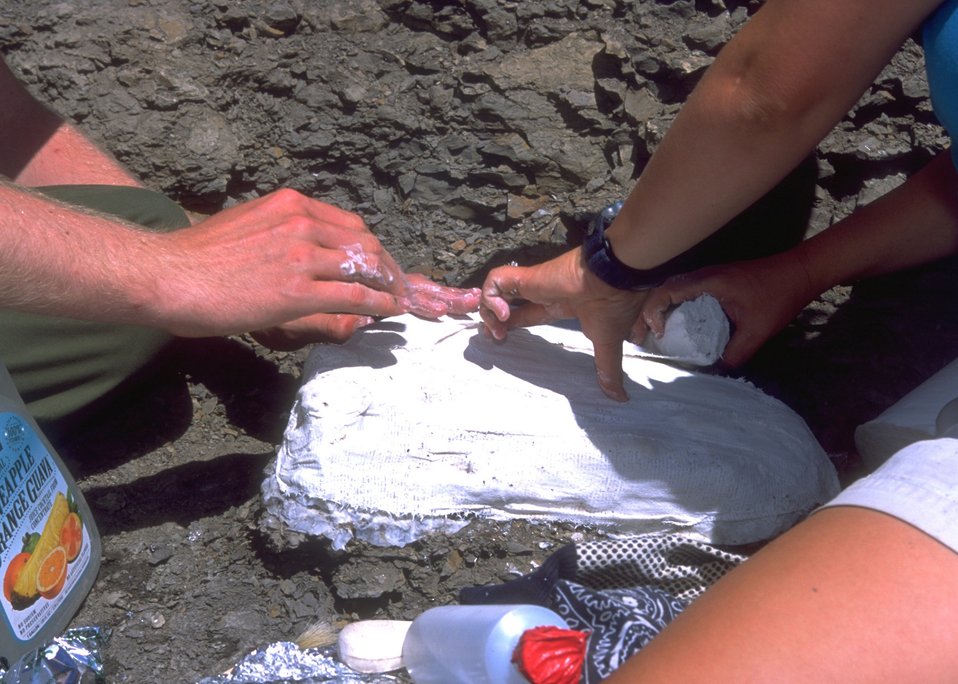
Paleontologist preparing a cast for a dinosaur bone, Lance Creek Fossil Area, Newcastle Field Office.